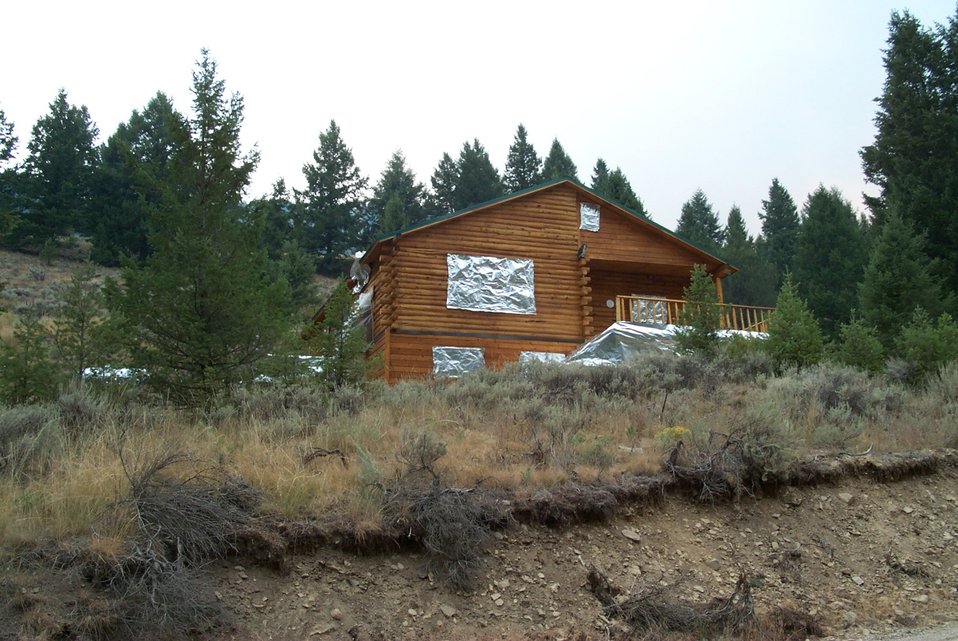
Fire retardant measures Urban interface Fire Clearwater Fire Salmon Field Office USRD Upper Snake River District